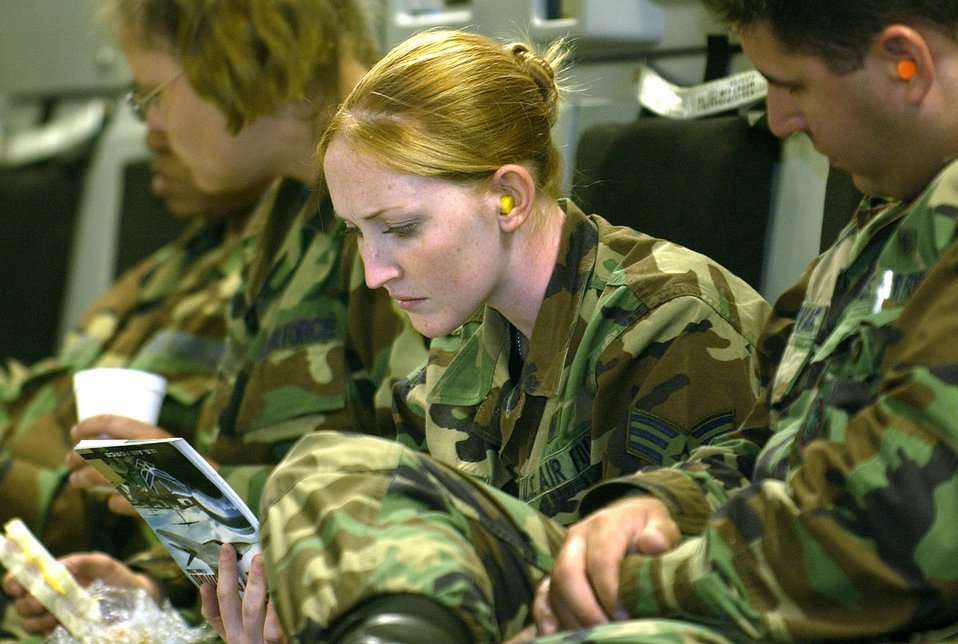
Airmen, Soldiers polish skills at Golden Medic

Senior Airman Samantha Dale reads her Airman's Manual aboard a C-17 Globemaster III on Saturday, June 17. The Airman was participating in a training exercise as part of Golden Medic 2006. The annual medical exercise involves medical servicemembers from various military branches, including the Air Force and Army this year. Airman Dale is assigned to the 452nd Aeromedical Staging Squadron at March Air Reserve Base, Calif.